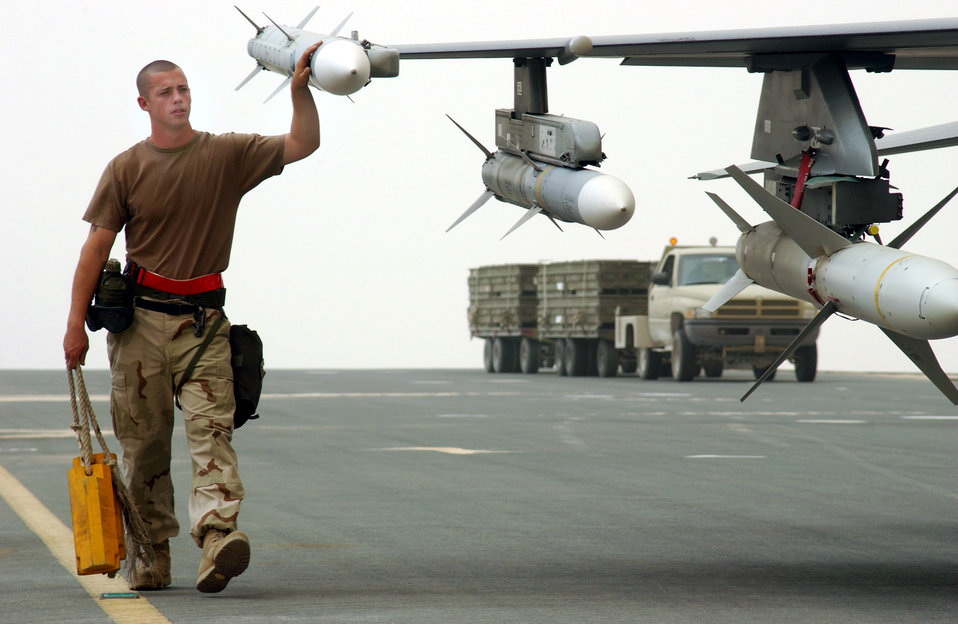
F-16 Fighting Falcon

OPERATION IRAQI FREEDOM -- Airman 1st Class Adam McChord helps tow an F-16 Fighting Falcon. McChord is a crew chief assigned to the 379 Air Expeditionary Wing.